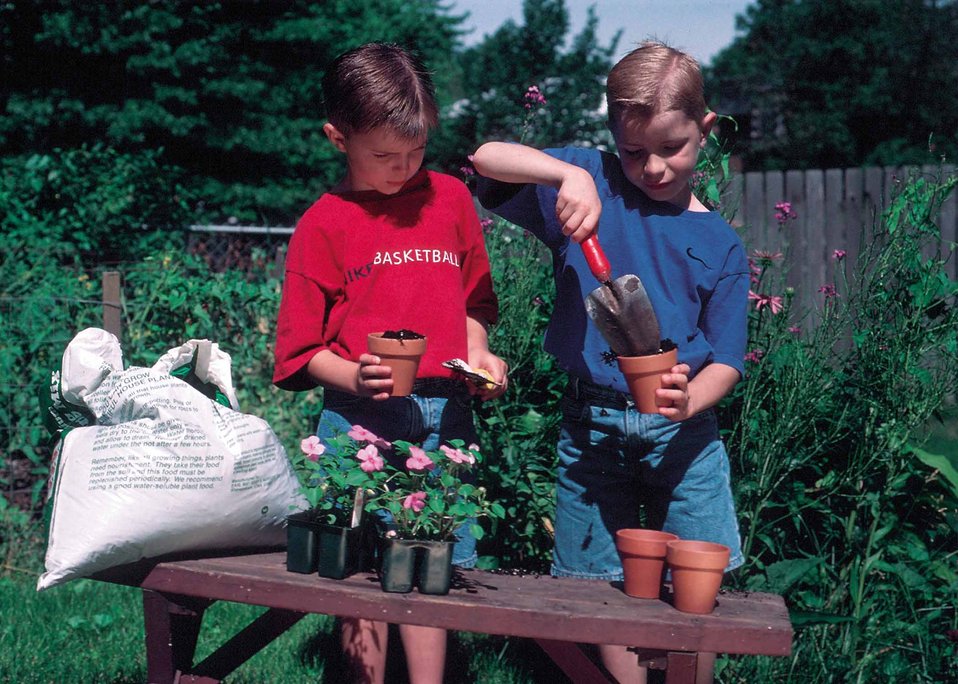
Young boys begin to learn about conservation in the back yard by planting and caring for plants in Urbandale, Iowa.